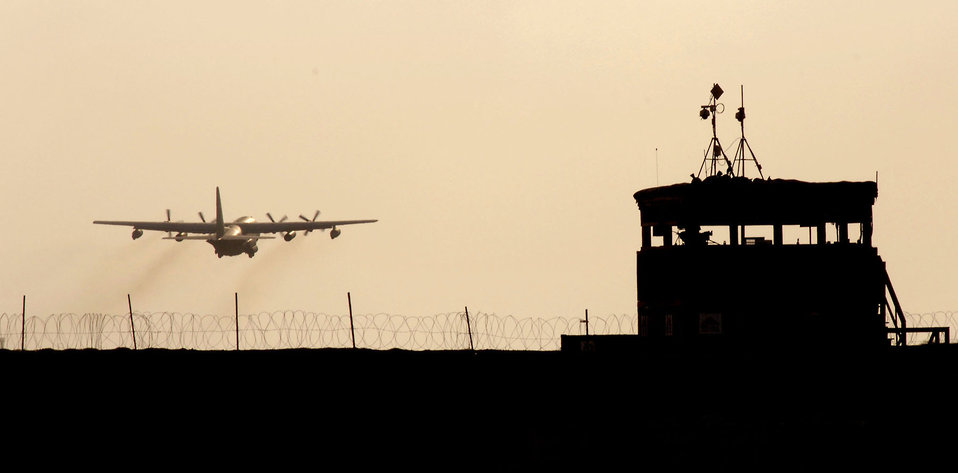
Camp Lemonier

An HC-130P takes off from Camp Lemonier on its way down range in support of the Combined Joint Task Force - Horn of Africa mission April 4. CJTF - HOA is a unit of United States Central Command. The organization's mission is to prevent conflict, promote regional stability and protect coalition interests in order to prevail against extremism.